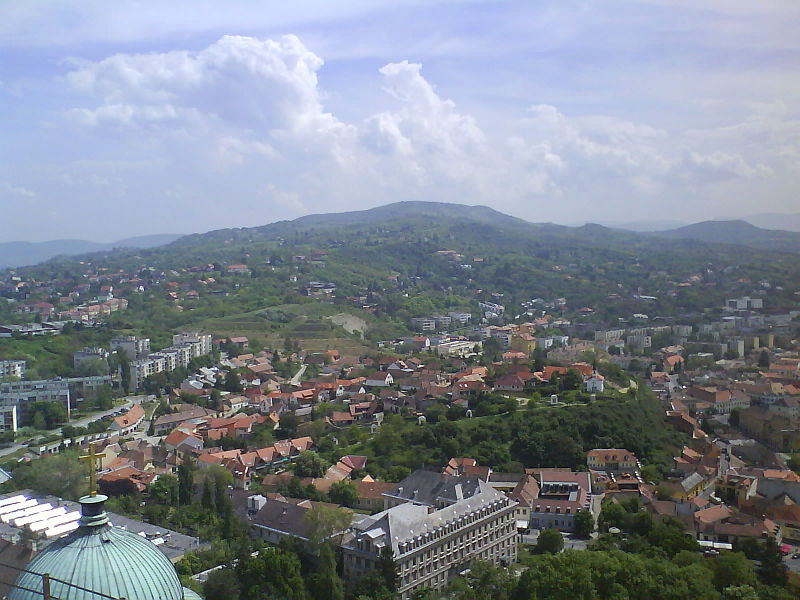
Wiew of the countryside and Esztergom from the Basilica, in Hungary. Magyar: Esztergom és vidékének látképe a Bazilikából.